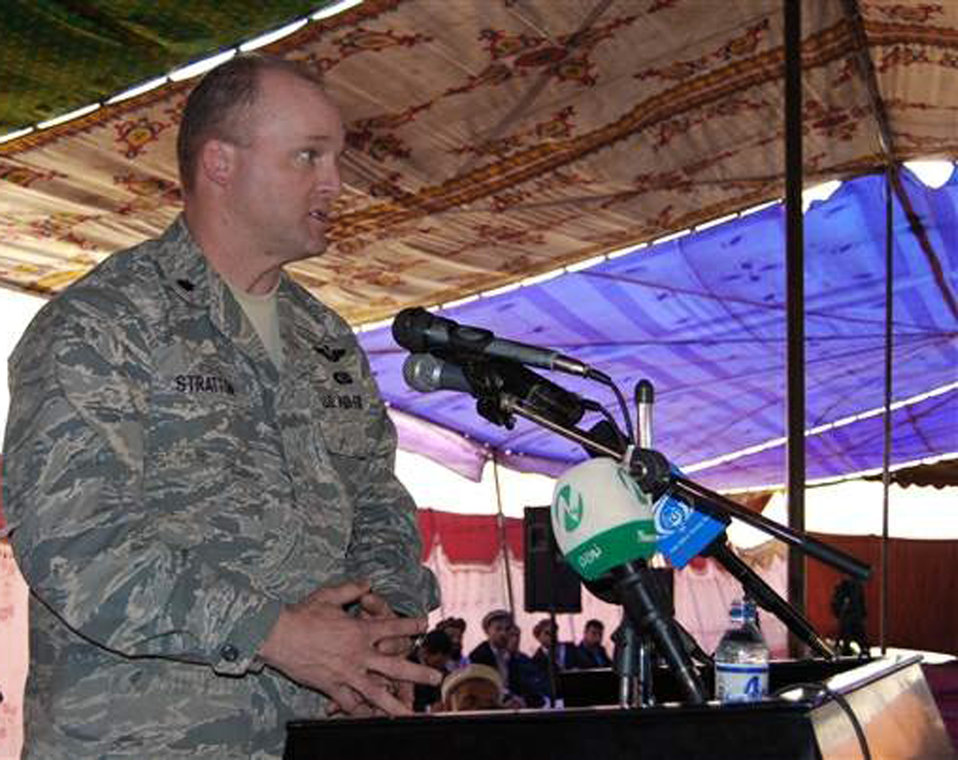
Defense officials identify Air Force casualties

Lt. Col. Mark E. Stratton speaks to a crowd of more than 5,000 people who attended the groundbreaking ceremony in the Safied Shahir village of Panjshir's Khenj district for a road to Badakshan province, March 30. Colonel Stratton is the Panjshir Provincial Reconstruction Team commander.